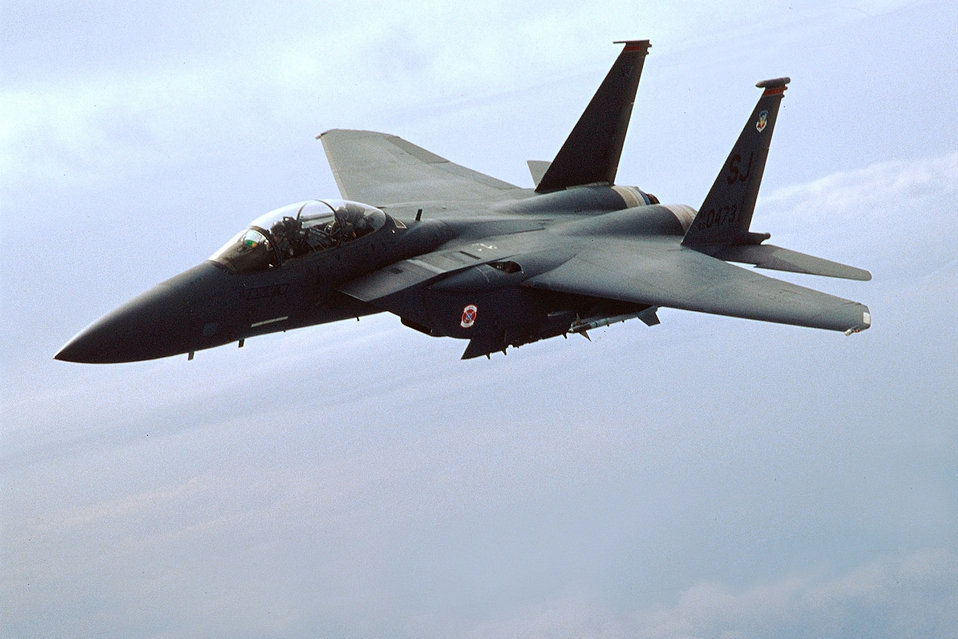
Eagle flight

FILE PHOTO -- An F-15E Strike Eagle from the 4th Fighter Wing, Seymour Johmson Air Force Base, N.C.